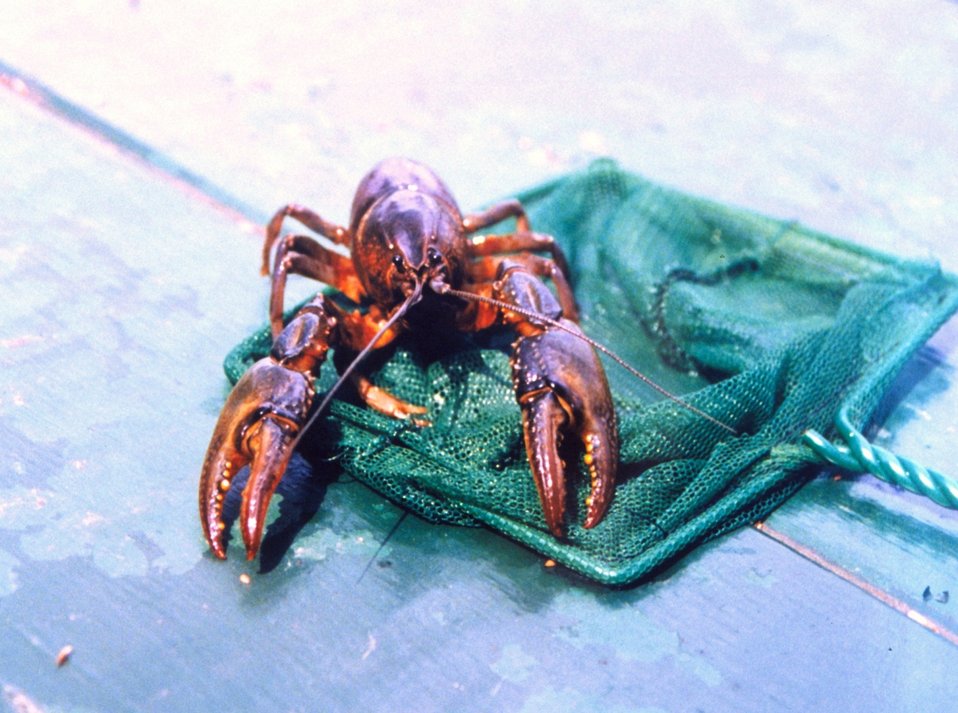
Crayfish found in a salt water pond near the Patuxent River.